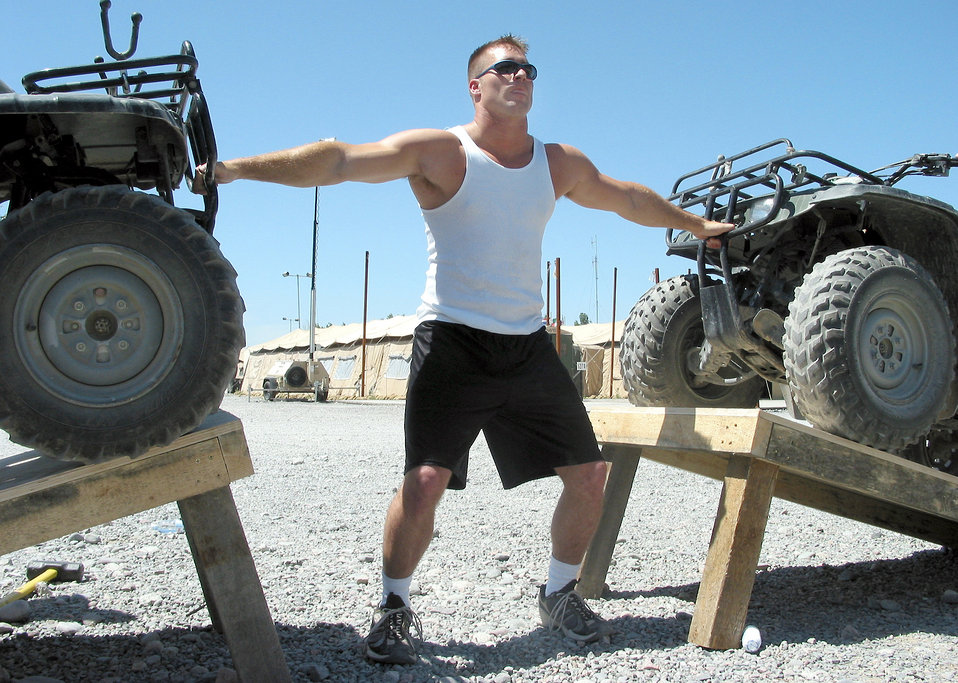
Iron Man

MANAS AIR BASE, Kyrgyzstan -- Staff Sgt. Joshua Stromberg strains to keep his grip on two, 400-pound all-terrain vehicles during a